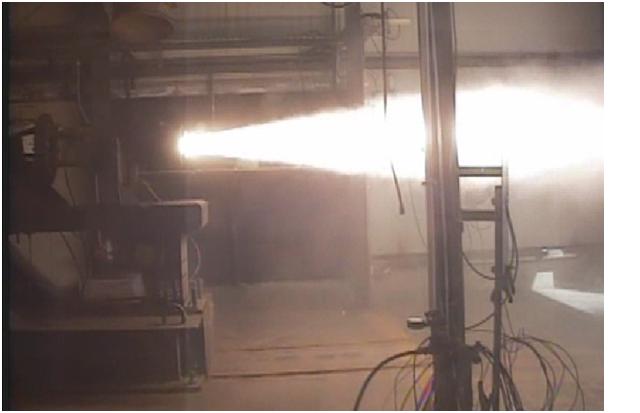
AFRL rocket fuel test

Air Force Research Laboratory scientists recently conducted a 15-pound Ballistic Test and Evaluation System, or BATES, test. In a BATES test, a small scale apparatus is used to test rocket propellant and designs in a standardized rocket motor casing.